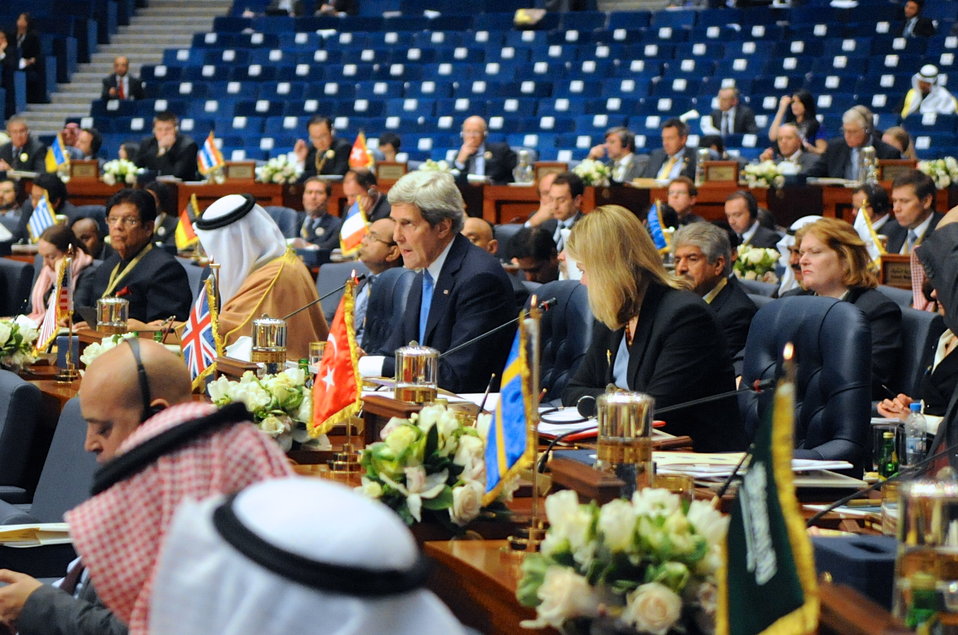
Secretary Kerry Addresses Syria Donors' Conference in Kuwait

U.S. Secretary of State John Kerry, bottom right, announces a $380 million pledge while addressing the Syria Donors' Conference in Kuwait City, Kuwait, on January 15, 2014.